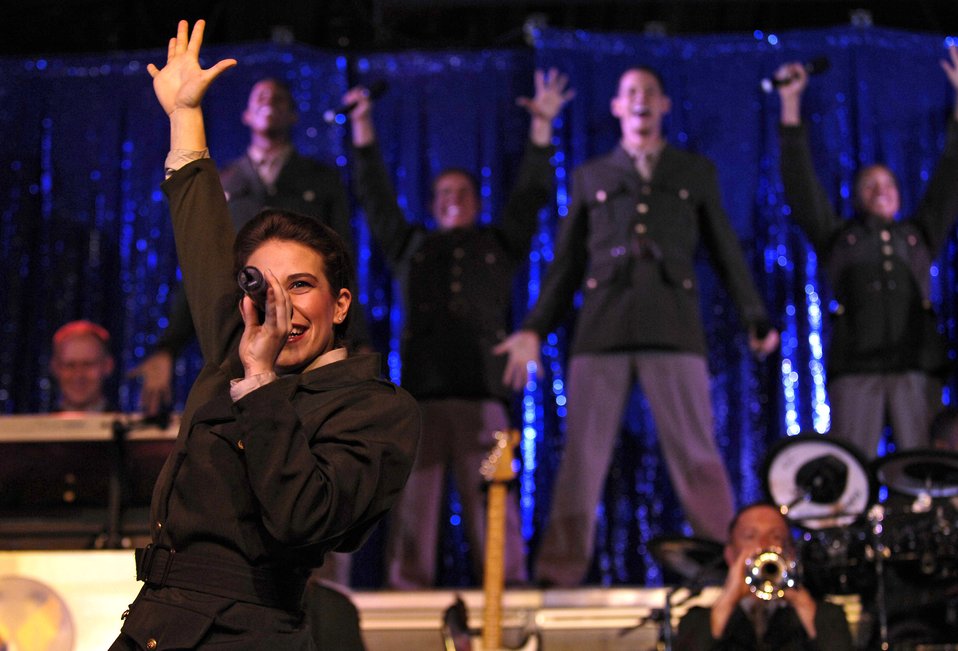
Uniquely ukulele: Airman plays from the heart

Tops In Blue performs Sept. 12 at the Waikiki Shell in Honolulu. The Air Force's signature entertainment group gave a free performance for the public to celebrate Air Force Week Honolulu and the Air Force's 60th anniversary. The team